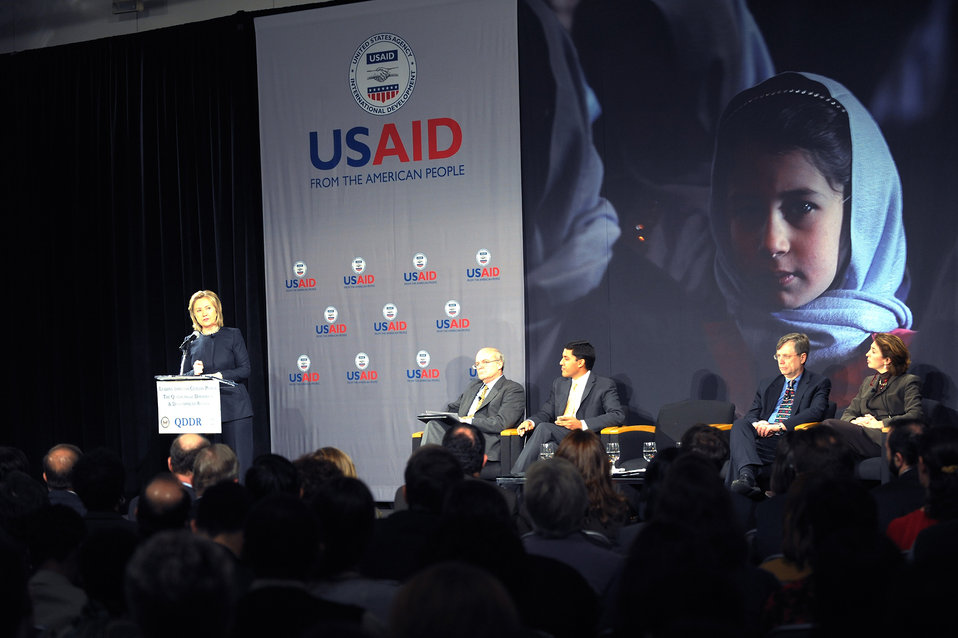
Secretary Clinton Delivers Remarks on the QDDR at USAID

U.S. Secretary of State Hillary Rodham Clinton delivers remarks at a Town Hall on the Quadrennial Diplomacy and Development Review at USAID at the Ronald Reagan Building in Washington, D.C., on December 17, 2010.